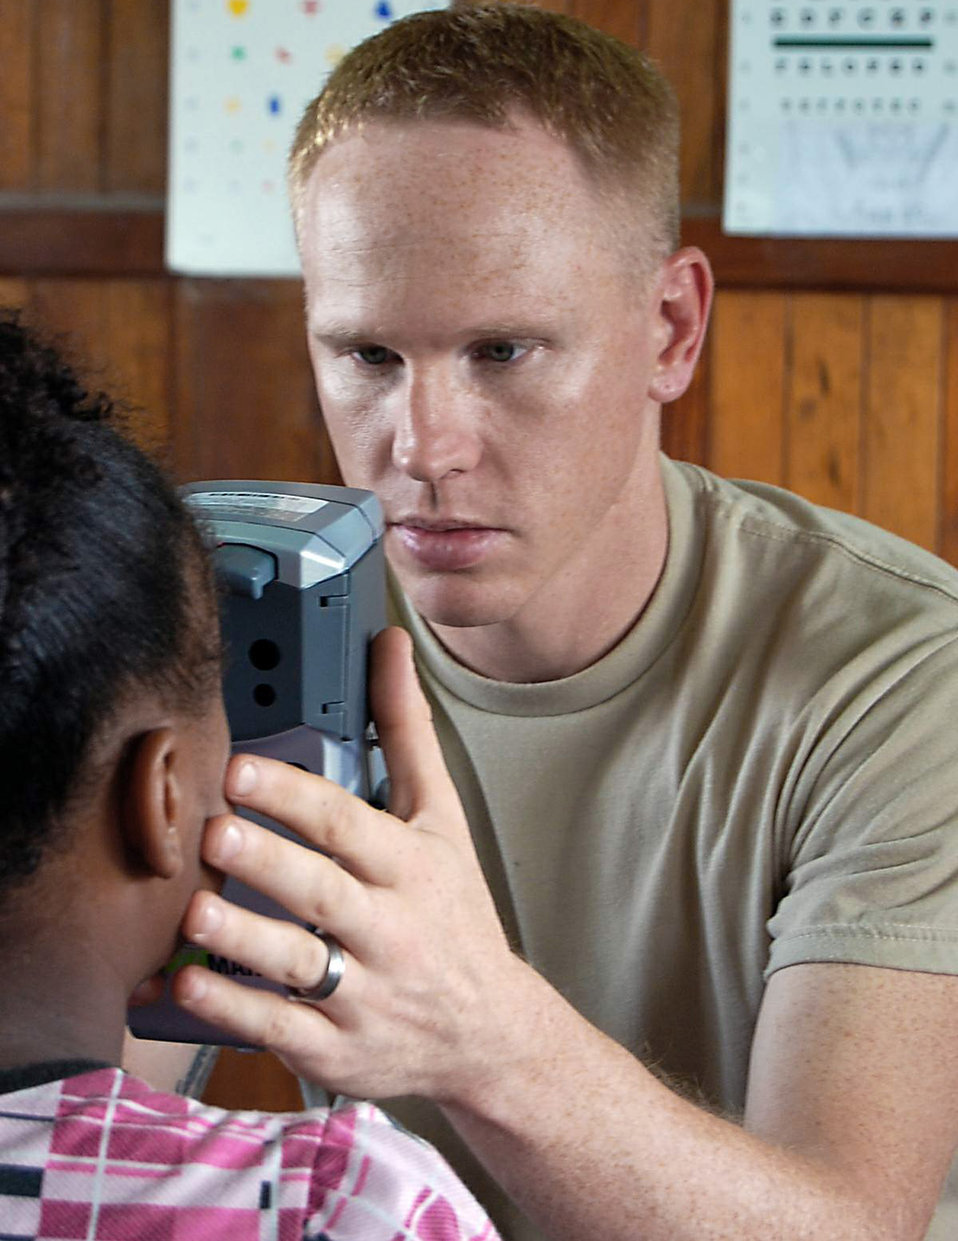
Continuing Promise 2009

Tech. Sgt. Josh Karash performs an eye exam on a Panamanian child in Colon, Panama, during Continuing Promise 2009. He is from the 56th Aerospace Medicine Squadron at Luke Air Force Base, Ariz. The USNS Comfort is currently supporting Continuing Promise 2009 with a four month humanitarian mission to seven countries in Latin America and the Caribbean